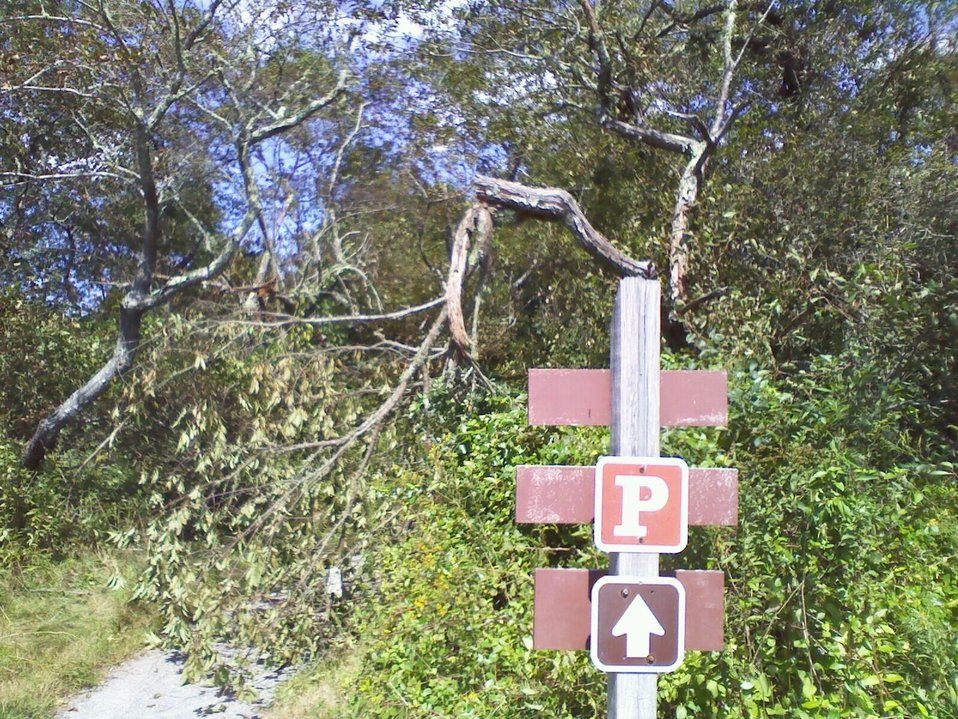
Rhode Island Trustom Pond National Wildlife Refuge

Fallen branches on hiking trail at Trustom Pond National Wildlife Refuge in Rhode Island. Janis Nepshinsky/USFWS